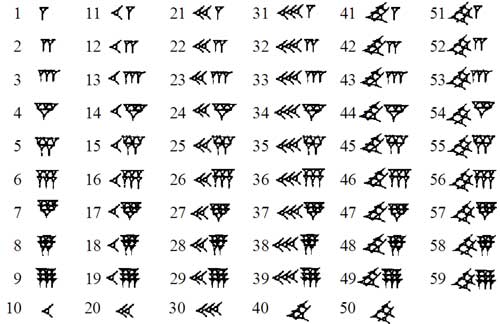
Babylonian numerals